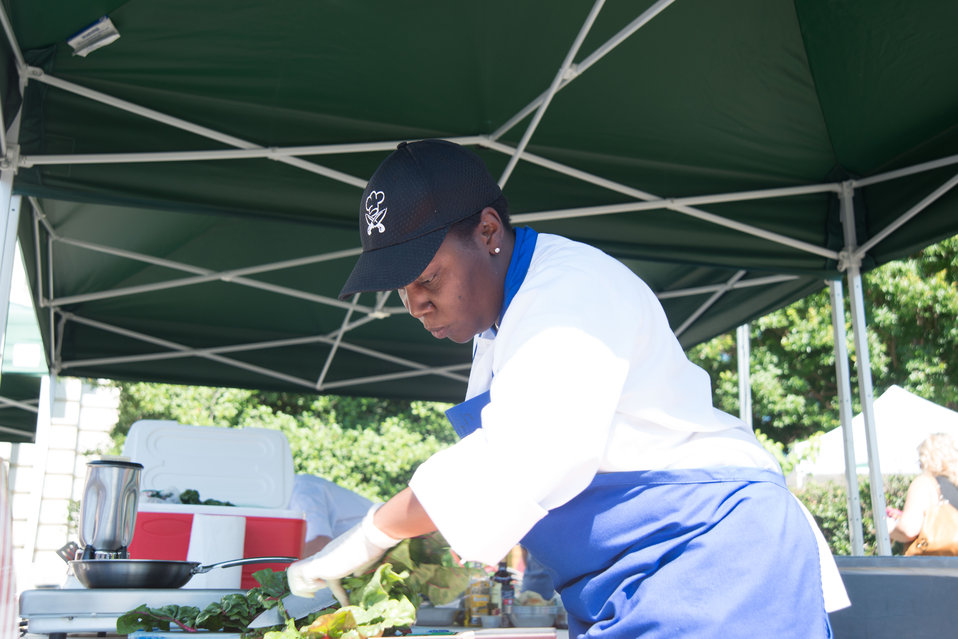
U.S. Air Force Staff Sergeant (SSgt) Tasha N. Goodrich prepares a meal at the Military Chefs barbeque battle held at the opening of the U.S. Department of Agriculture’s (USDA) Famers Market in the east parking lot at USDA on Friday, Jun. 6, 2014.